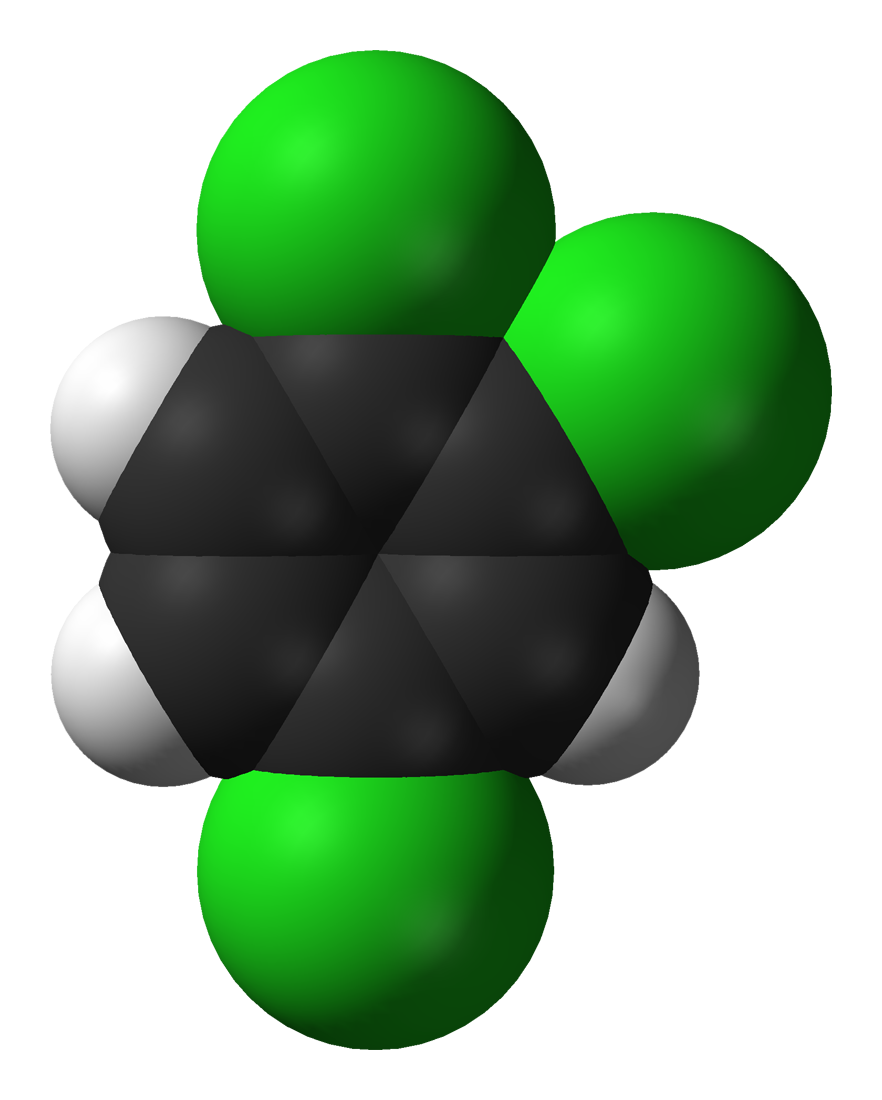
Space-filling model of the 1,2,4-trichlorobenzene molecule, C6H3Cl3.